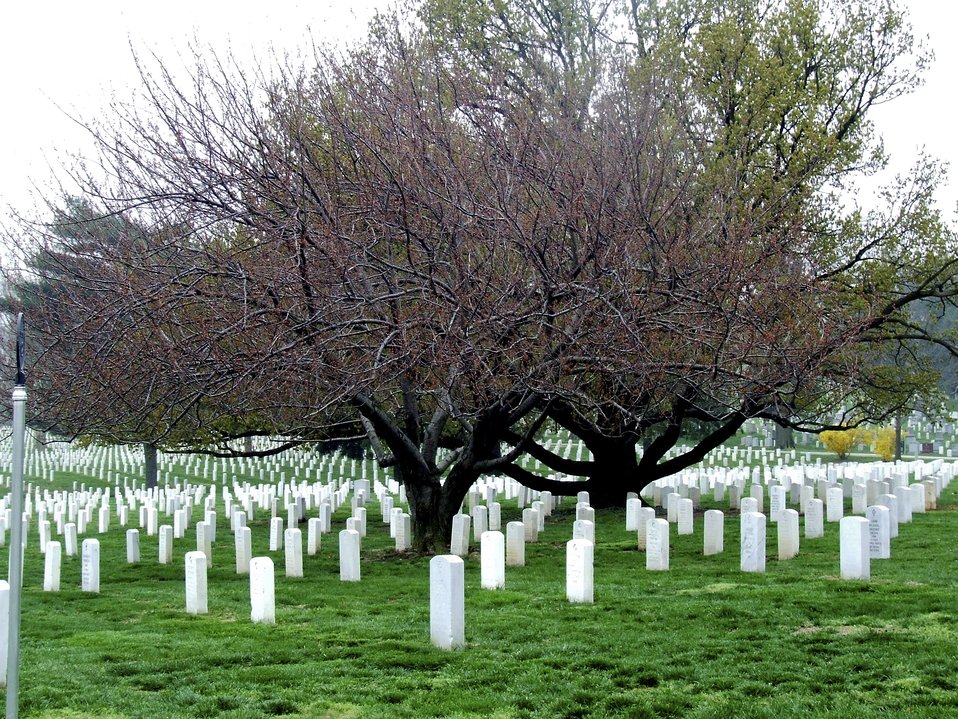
A final resting place

Veterans from all of the nation's wars are buried in Arlington National Cemetery, Va., from the American Revolution through today's conflicts in Iraq and Afghanistan. Pre-Civil War dead were reinterred after 1900.